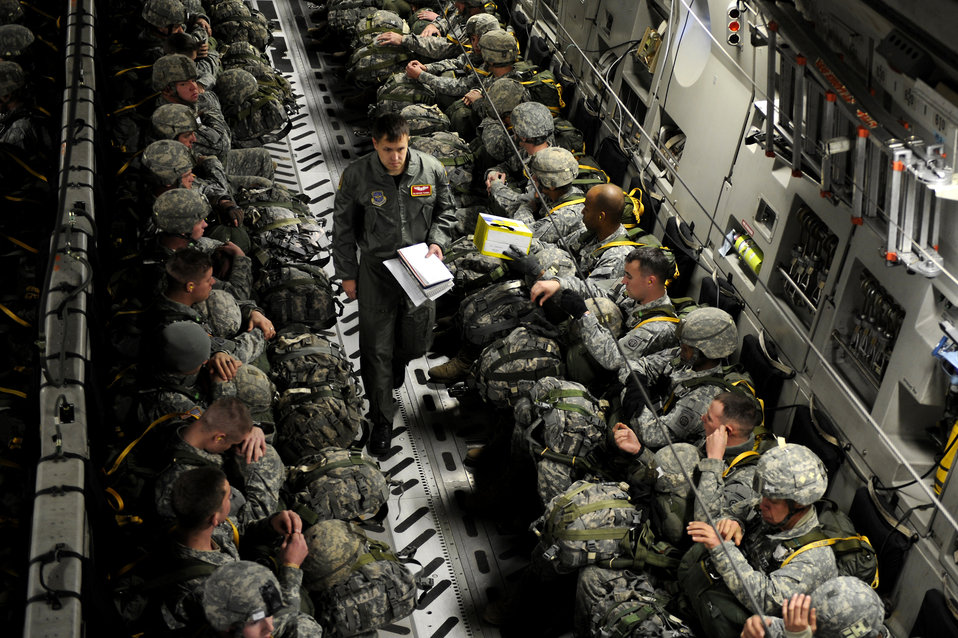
Buckle up!

Senior Airman Morgan Trammel ensures all paratroopers aboard a C-17A Globemaster III are secured before takeoff Feb. 9, 2011, during a joint operational access exercise at Pope Air Force Base, N.C. Airman Trammel is a loadmaster with the 10th Airlift Squadron. The paratroopers are from the 82nd Airborne Division.